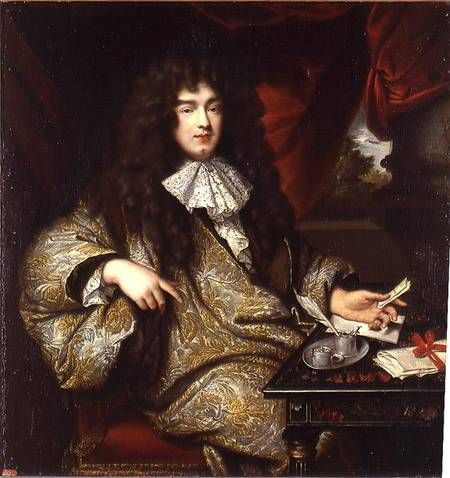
Marc Nattier d'après Claude Lefèbvre, Jean-Baptiste Colbert, marquis de Seignelay (1676)